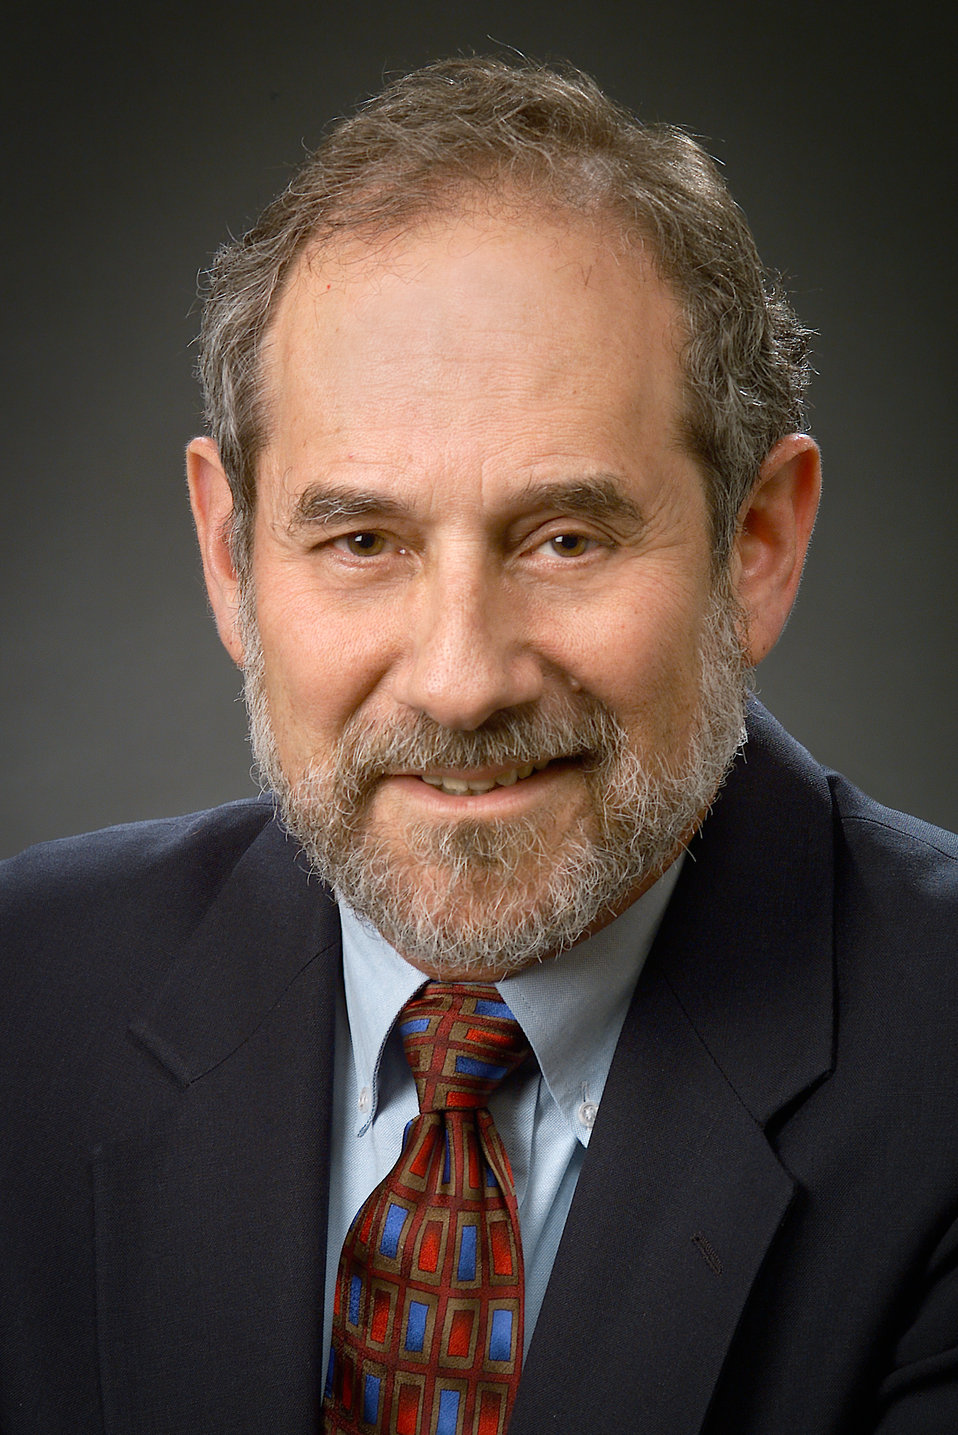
Harold Margolis, MD is Dir. of the Div. of Viral Hepatitis of the Nat. Center for Infectious Diseases at the CDC in Atlanta, GA.